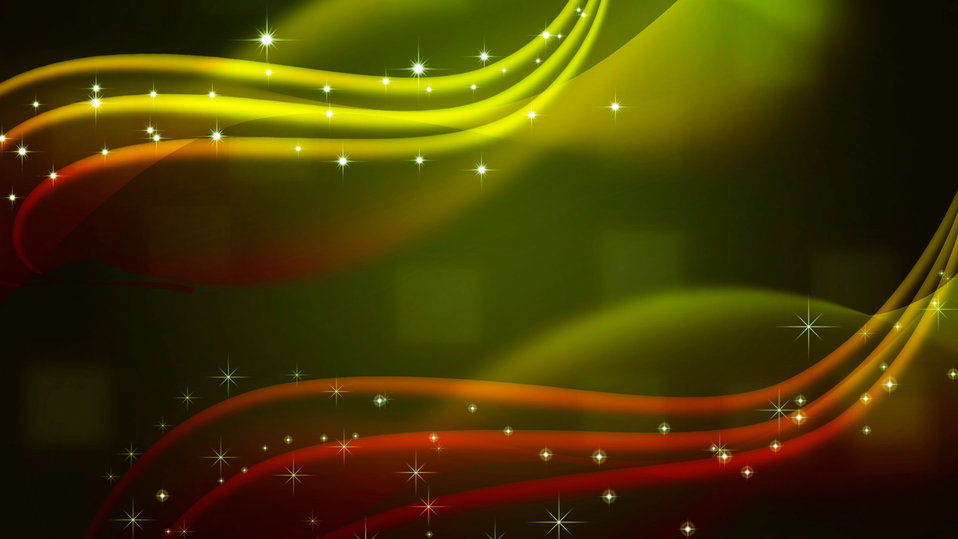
Abstract background

Abstract wallpaper.